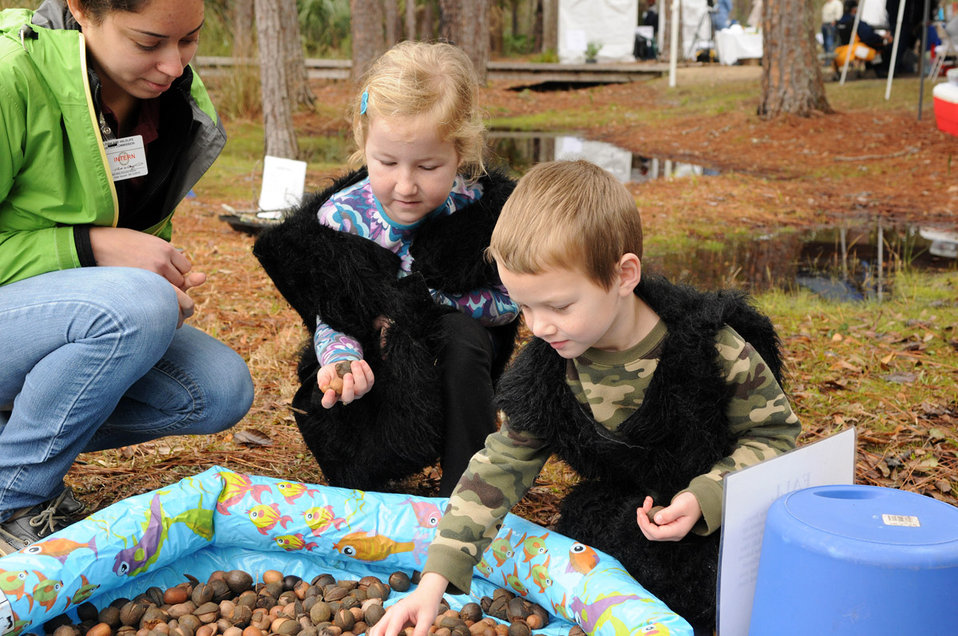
Learning what bears eat

St. Marks NWR 2014 WHO Festival. February 1, 2014.
A variety of exhibitors provided opportunities for festival goers to learn about ways to enjoy outdoor recreation.